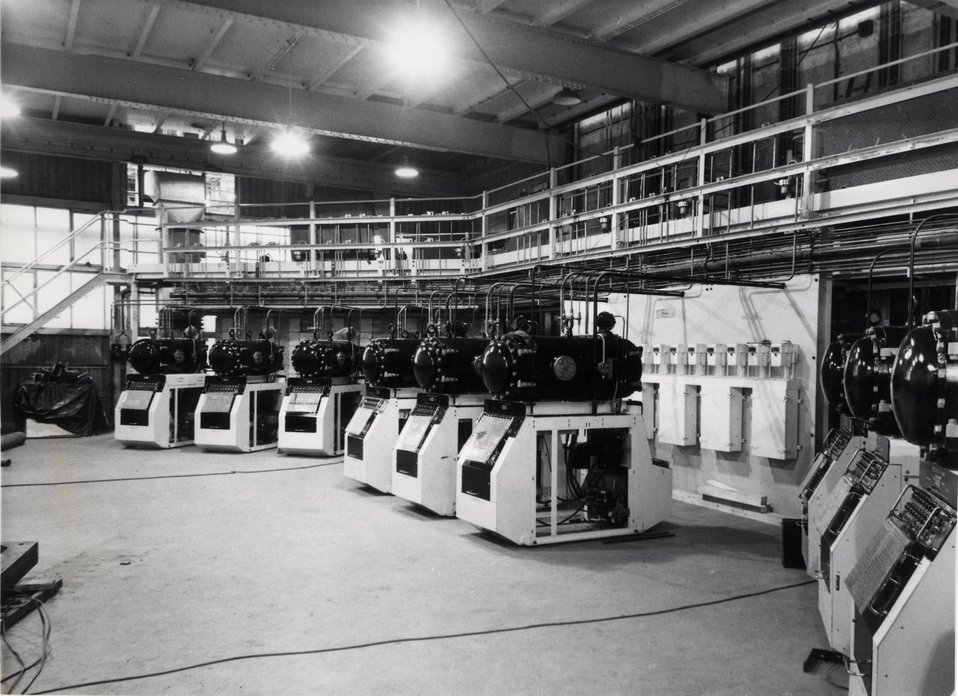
Calder Hall. The precipitation and monitor in the 'Sniffer Control Room.' c. 1956